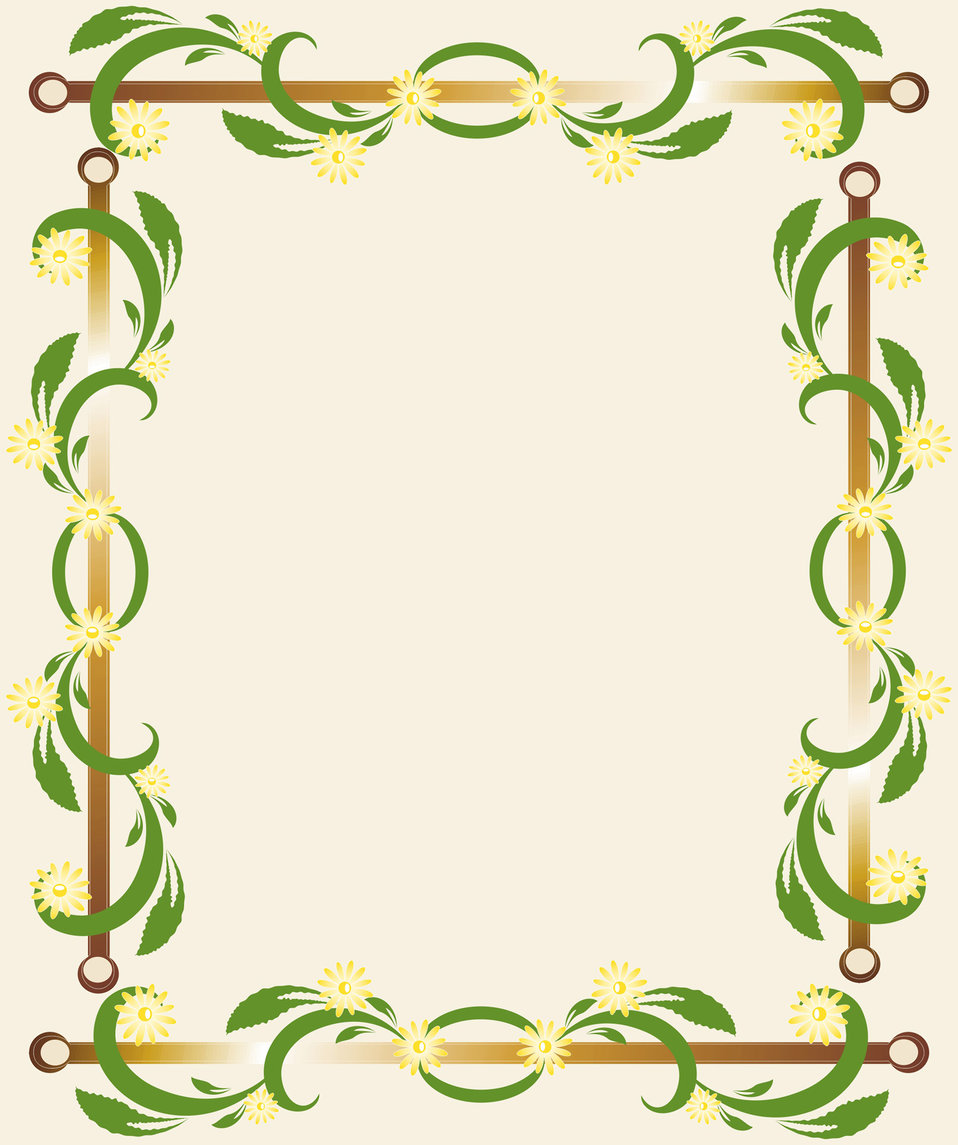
Vector background with a green border.